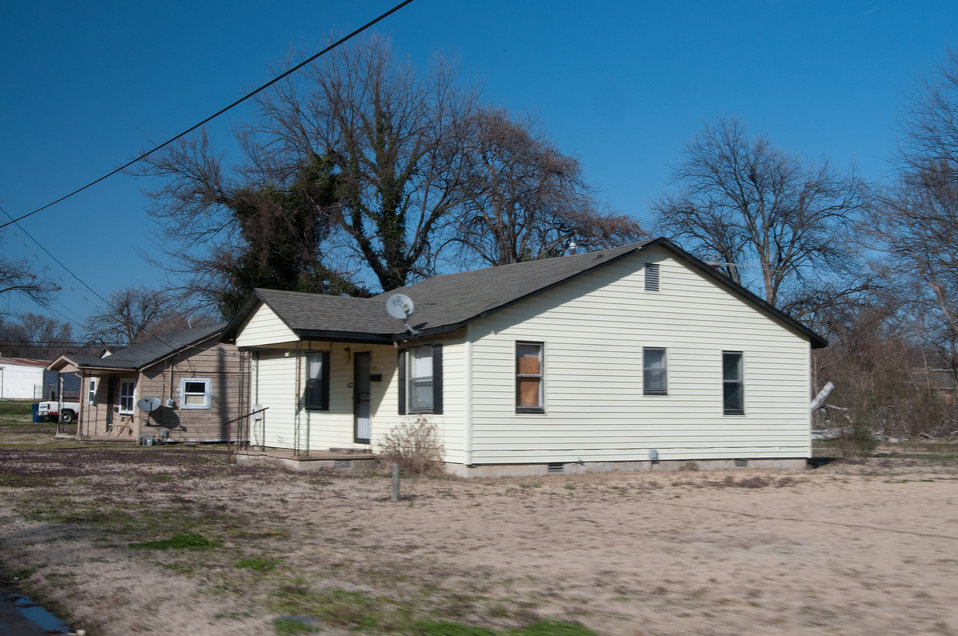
Houses sit vacant in Forest City, AR on Mar. 5, 2013. The East Arkansas Enterprise Community, Inc. in Forrest City, AR is one of 42 community-based organizations located in high poverty areas in the U.S. to benefit from the Arkansas Delta Seeds of Change (ADSOC) Initiative. The U.S. Department of Agriculture (USDA) in partnership with Heifer International (an International organization whose mission is to work with communities to end hunger and poverty and care for the Earth) and various for-profit and non-profit organizations have put in motion the “Seeds of Change Implementation Plan” to use sustainable agriculture to build food systems in the Arkansas Delta. The program has evolved into the ADSOC Initiative.